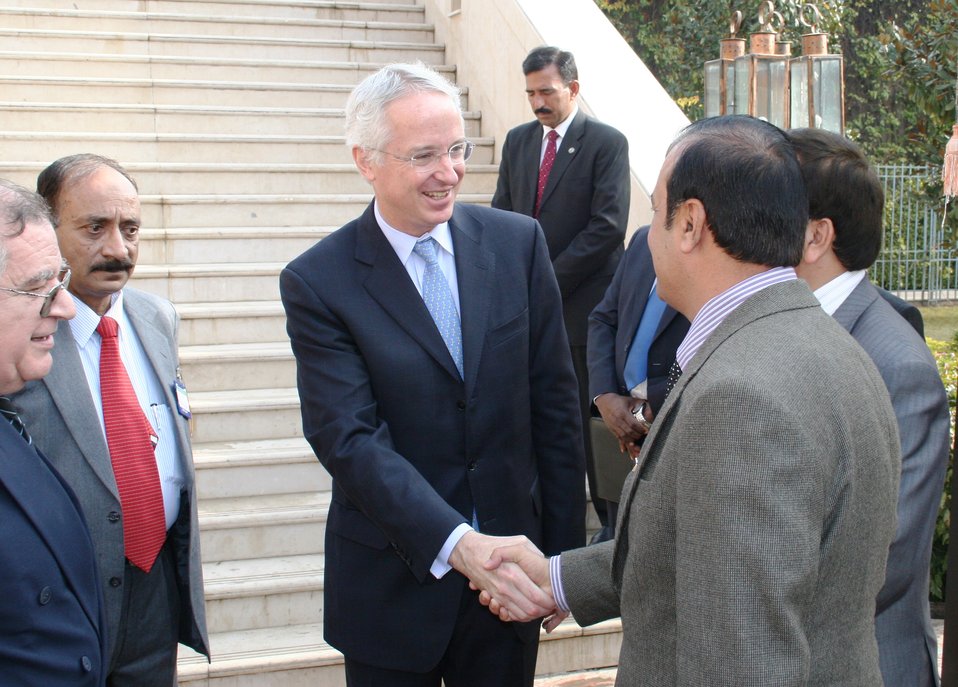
Trade Growth

Islamabad, January 13, 2011 - U.S. Ambassador Cameron Munter meets prominent businessmen from across Pakistan after addressing a two-day roundtable sponsored by the U.S. Agency for International Development on designing and implementing trade reform.